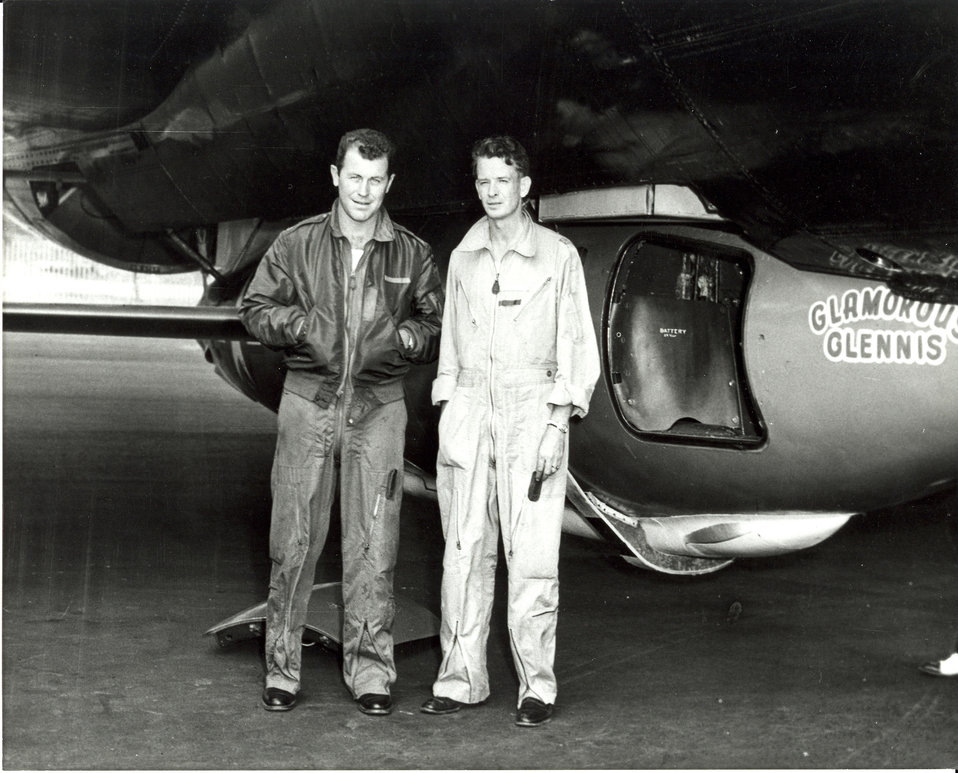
Captains Yeager and Ridley

Capts. Charles E.